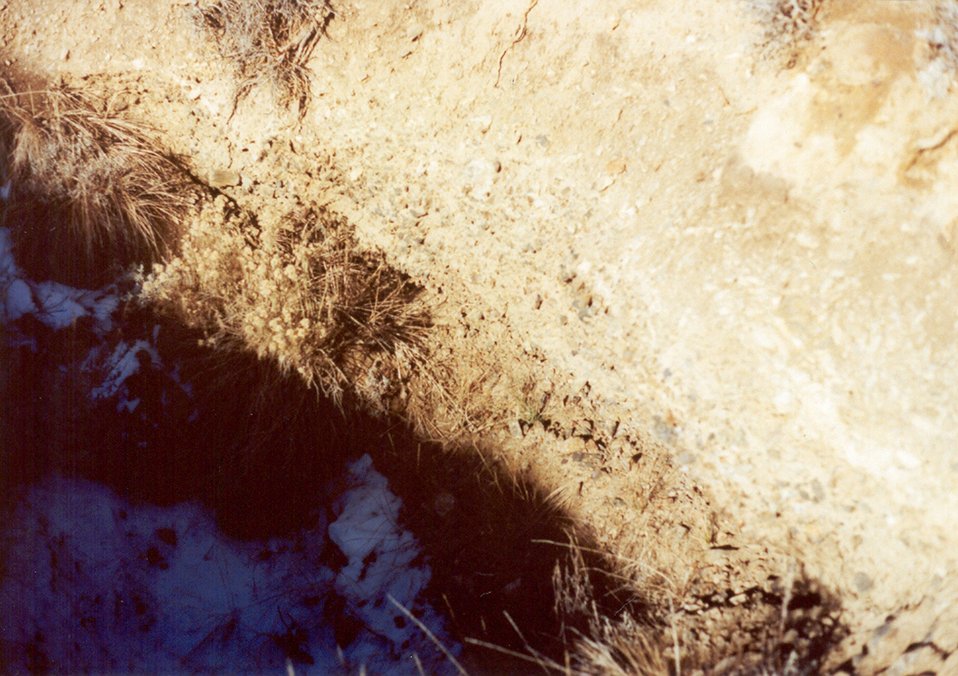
Abandoned Mine Salmon Field Office Upper Columbia Salmon Clearwater District UCSC